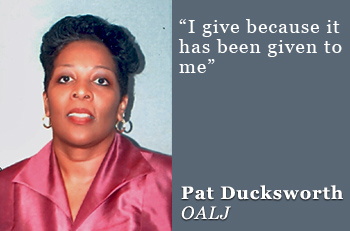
patducksworth